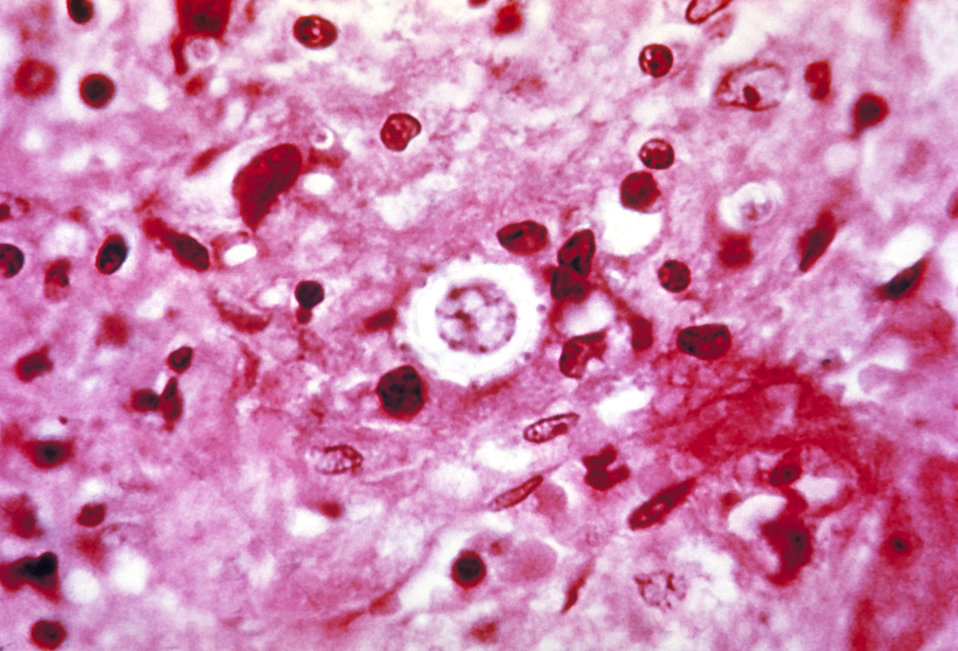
This micrograph depicts the histopathologic changes associated with paracoccidioidomycosis due to P. brasiliensis.